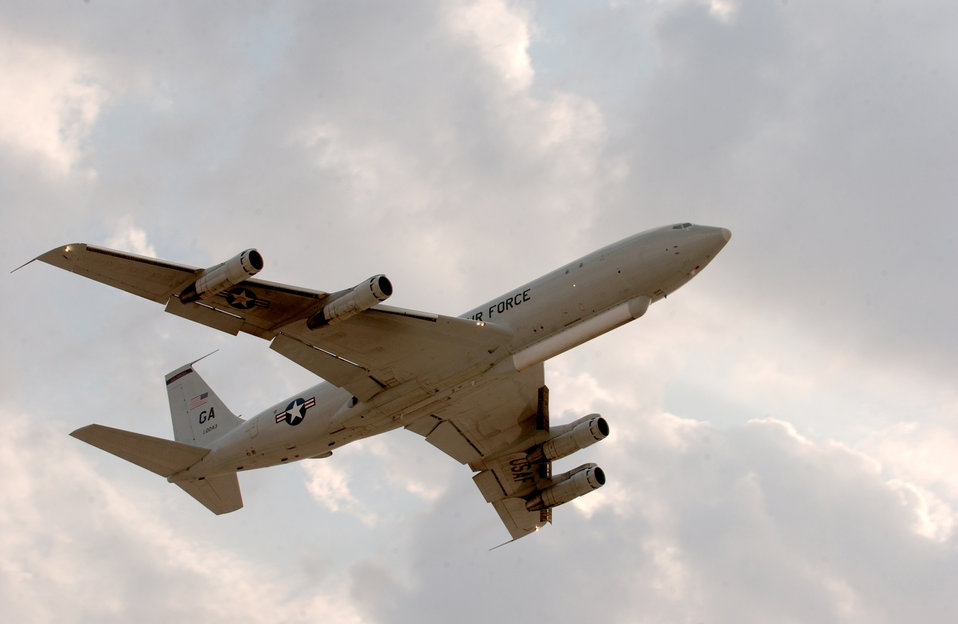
Airpower Summary for May 15, 2007

An Air Force E-8C Joint Surveillance Target Attack Radar System aircraft takes off for an intelligence, surveillance and reconnaissance mission from a base in Southwest Asia. The Air Force and U.S. Navy participated in 25 ISR missions across the area of responsibility May 15. The JSTARS is modified with radar and computer subsystems that allow it to gather and display detailed battlefield information to ground forces.